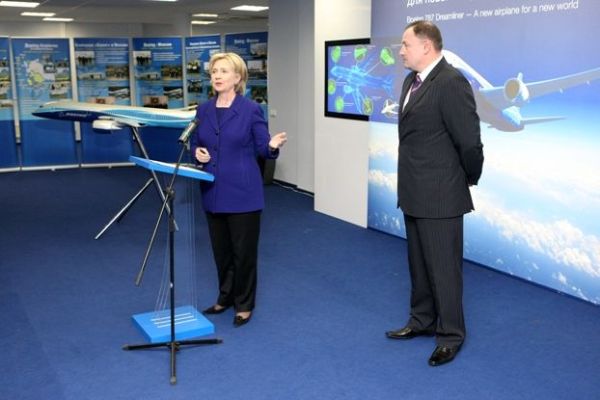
Secretary Clinton at Boeing Design Center in Moscow

U.S. Secretary of State Hillary Rodham Clinton gives remarks after being welcomed by Boeing Russia/CIS President Sergey Kravchenko at Boeing Design Center in Moscow, Russia, October 13, 2009.